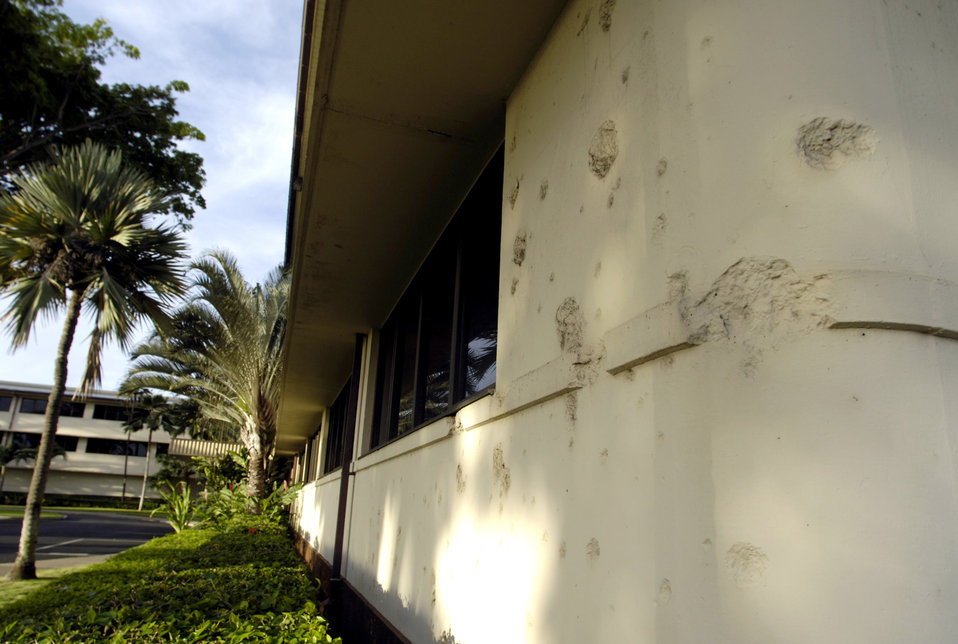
Pearl Harbor remembered

HICKAM AIR FORCE BASE, Hawaii (AFPN) -- Bullet and shrapnel holes still scar the outside of the Pacific Air Forces headquarters building here. The scars are a constant reminder of the Dec. 7, 1941, surprise Japanese attack on military installations on the Hawaiian island of Oahu.